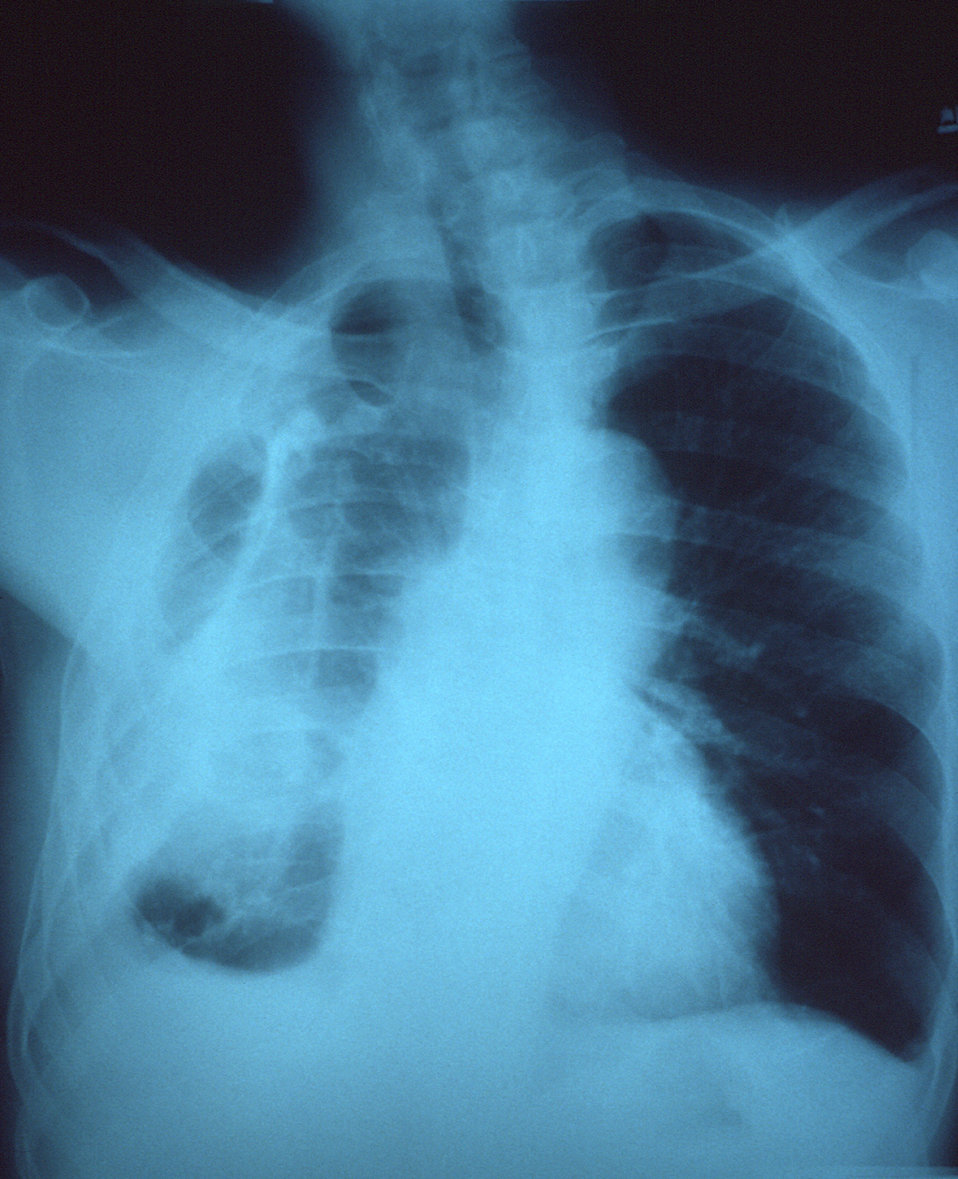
This AP chest x-ray revealed the presence of a right fibrothorax, which was thought to be due to a previous empyema.